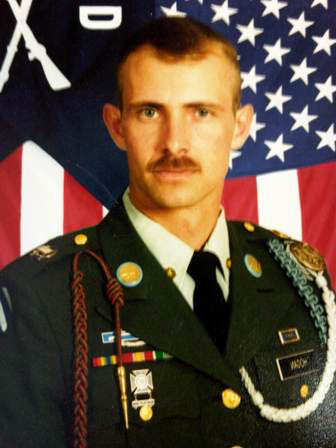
Thomas Hogan, (U.S. Army 1989 to 1993) is a veteran of Operation Desert Storm. He is a fish biologist at Lahonton NFH in Nevada, where he helps coordinate and implement recovery of the Lahontan cutthroat trout and the cui-ui (Chasmistes cujus).